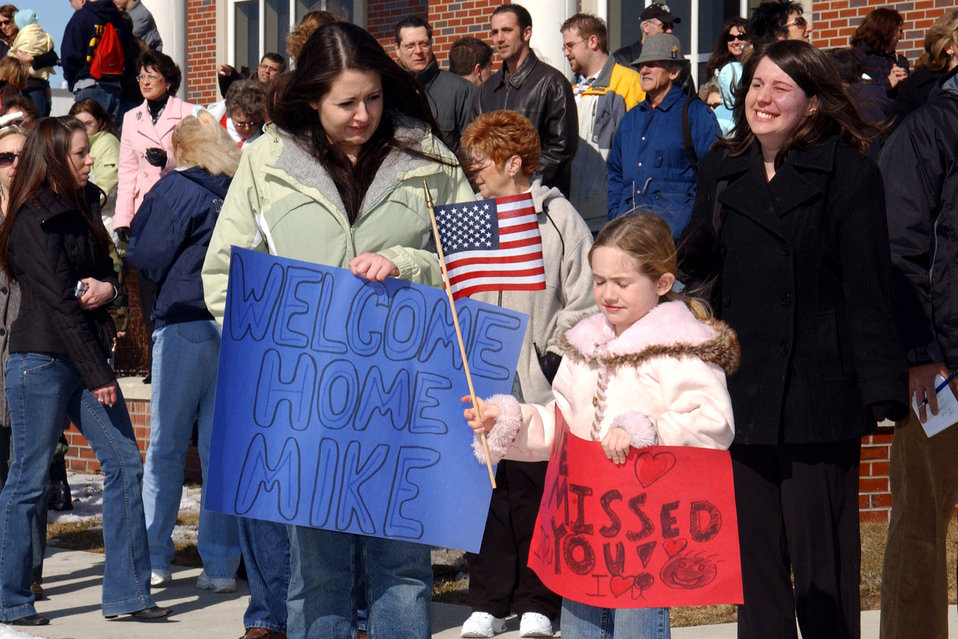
Michigan Air Guard returns from Iraq deployment

Almost 200 family members and friends welcome home the 127th Wing Airmen returning to Selfridge Air National Guard Base, Mich., March 5 from deployment to Balad Air Base, Iraq. The Airmen were deployed for approximately 45 days for Air Expeiditionary Force 5and 6 in support of Operation Iraqi Freedom and supported F-16 Fighting Falcon operations there.